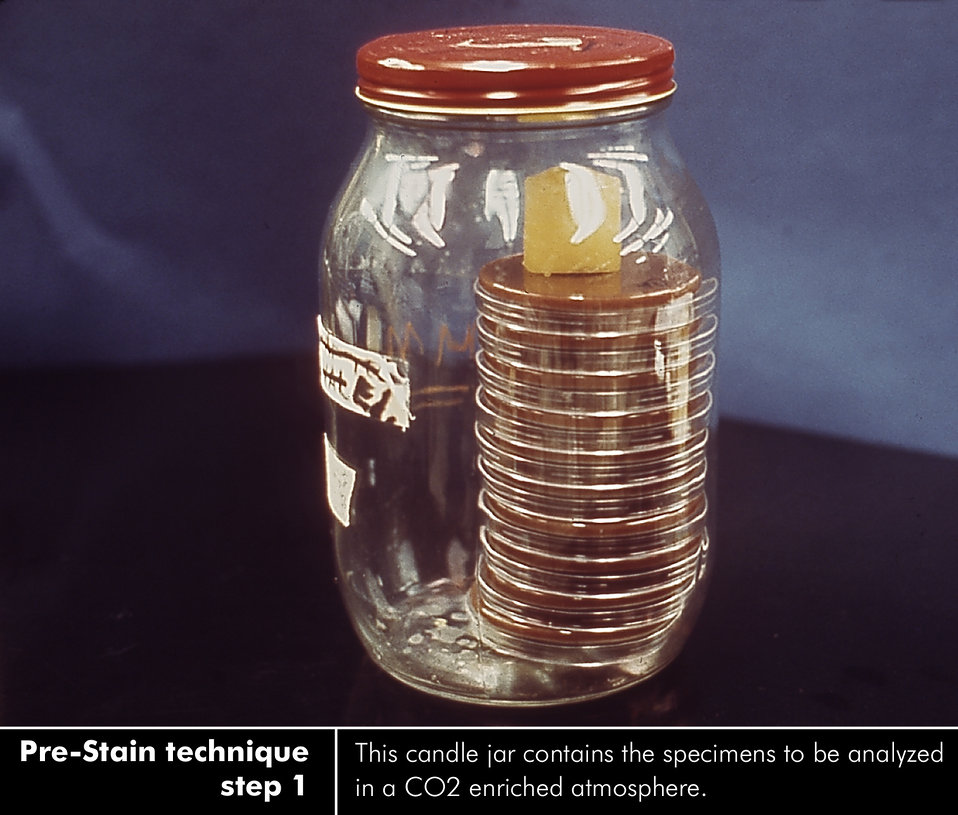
Pre-stain technique - Step 1 of 5. See PHIL ID#'s: 3431, 3572, 3432, 3565, 3428 for the complete set.